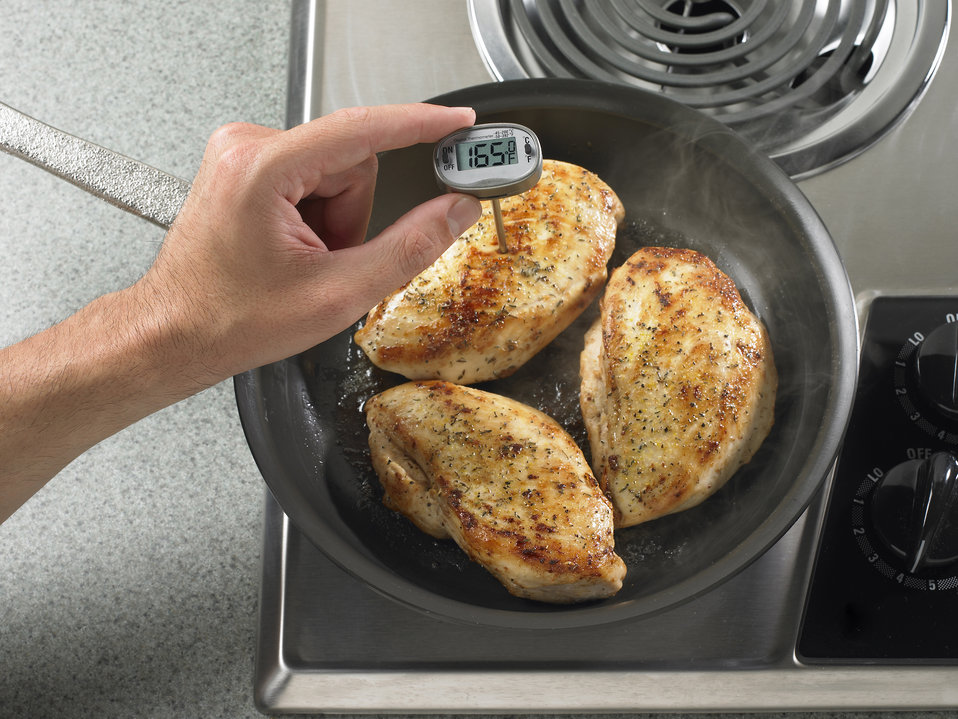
The U. S. Department of Agriculture (USDA) Food Safety Inspection Service (FSIS) recommends an internal cooked temperature of 165 to 180 degrees for poultry. The food thermometer depicted here is thermistor-style food thermometer, which uses a resistor (a ceramic semiconductor bonded in the tip with temperature-sensitive epoxy) to measure temperature. The thickness of the probe is approximately 1/8 of an inch and takes roughly 10 seconds to register the temperature on the digital display. Since the semiconductor is in the tip, thermistors can measure temperature in thin foods, as well as thick foods. Because the center of a food is usually cooler than the outer surface, place the tip in the center of the thickest part of the food. This type of thermometer does not remain in the food while it is cooking but should be used near the end of the cooking process.